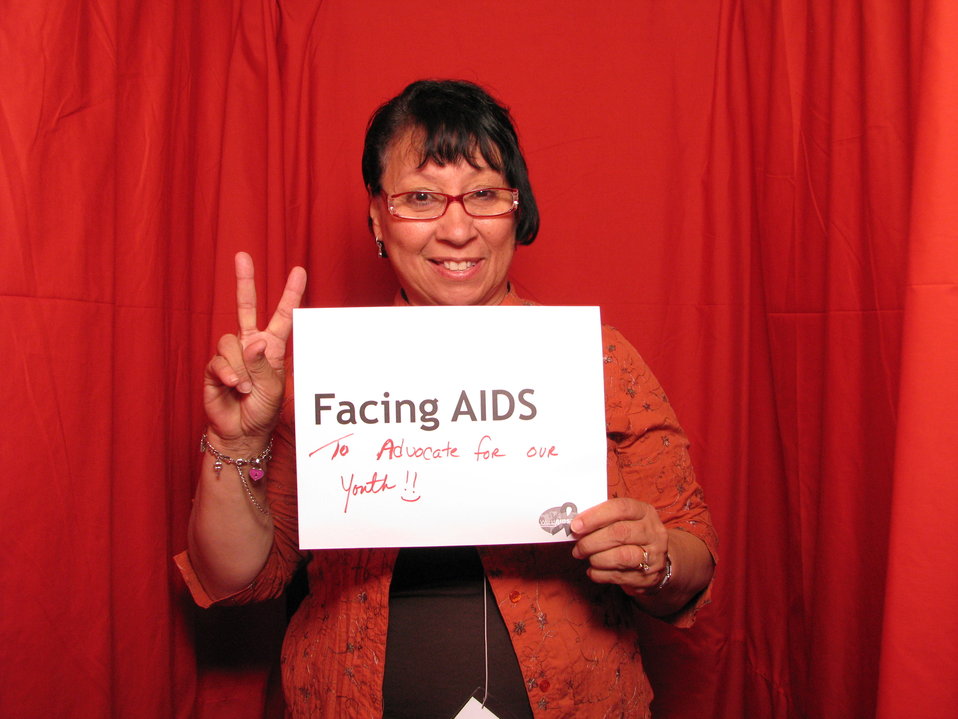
FACING AIDS to advocate for our youth!! :-)

From the AIDS.gov photo booth at the U.S. Conference on AIDS, September 2010 (Orlando, FL).